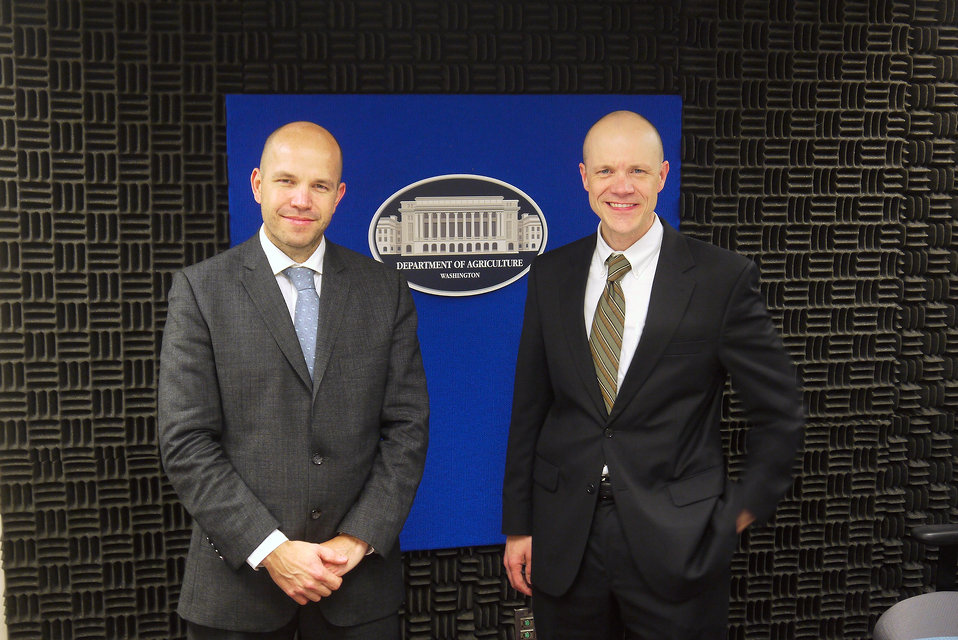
Head of Rural and Regional Program, Organization for Economic Co-operation and Development Enrique Garcilazo and Agriculture Deputy Under Secretary for Rural Development (RD) Doug O’Brien meet at the U.S. Department of Agriculture in Washington, D.C. on Jan. 15, 2013.